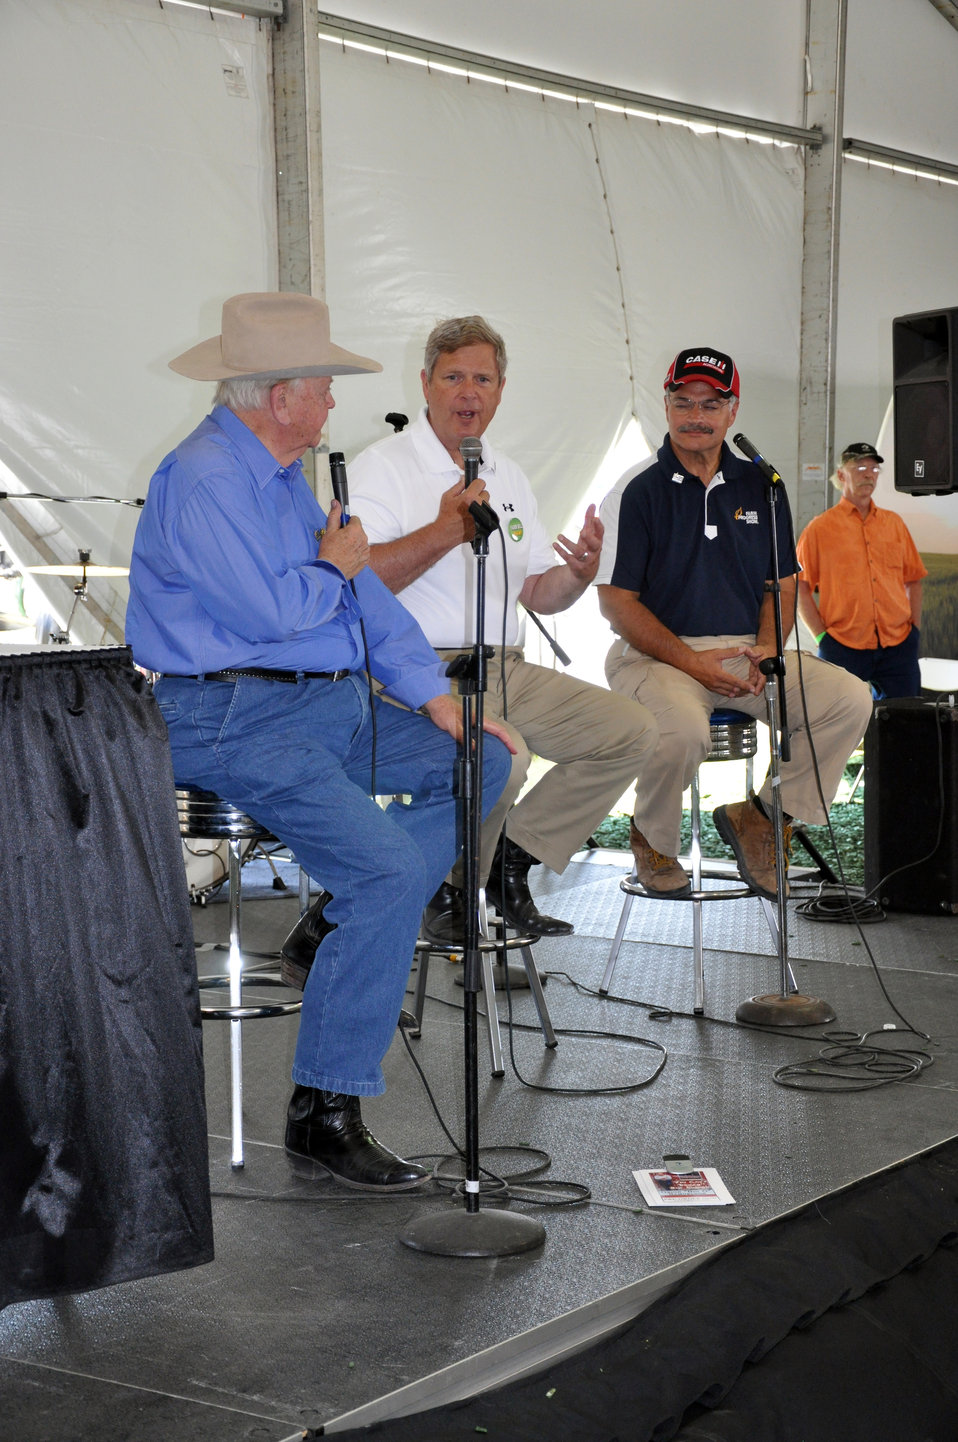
Agriculture Secretary Tom Vilsack (center) visits with Orion Samuelson (left) and Max Armstrong of WGN Radio during the 2012 Farm Progress Show in Boone, Iowa, on Aug. 30, 2012.